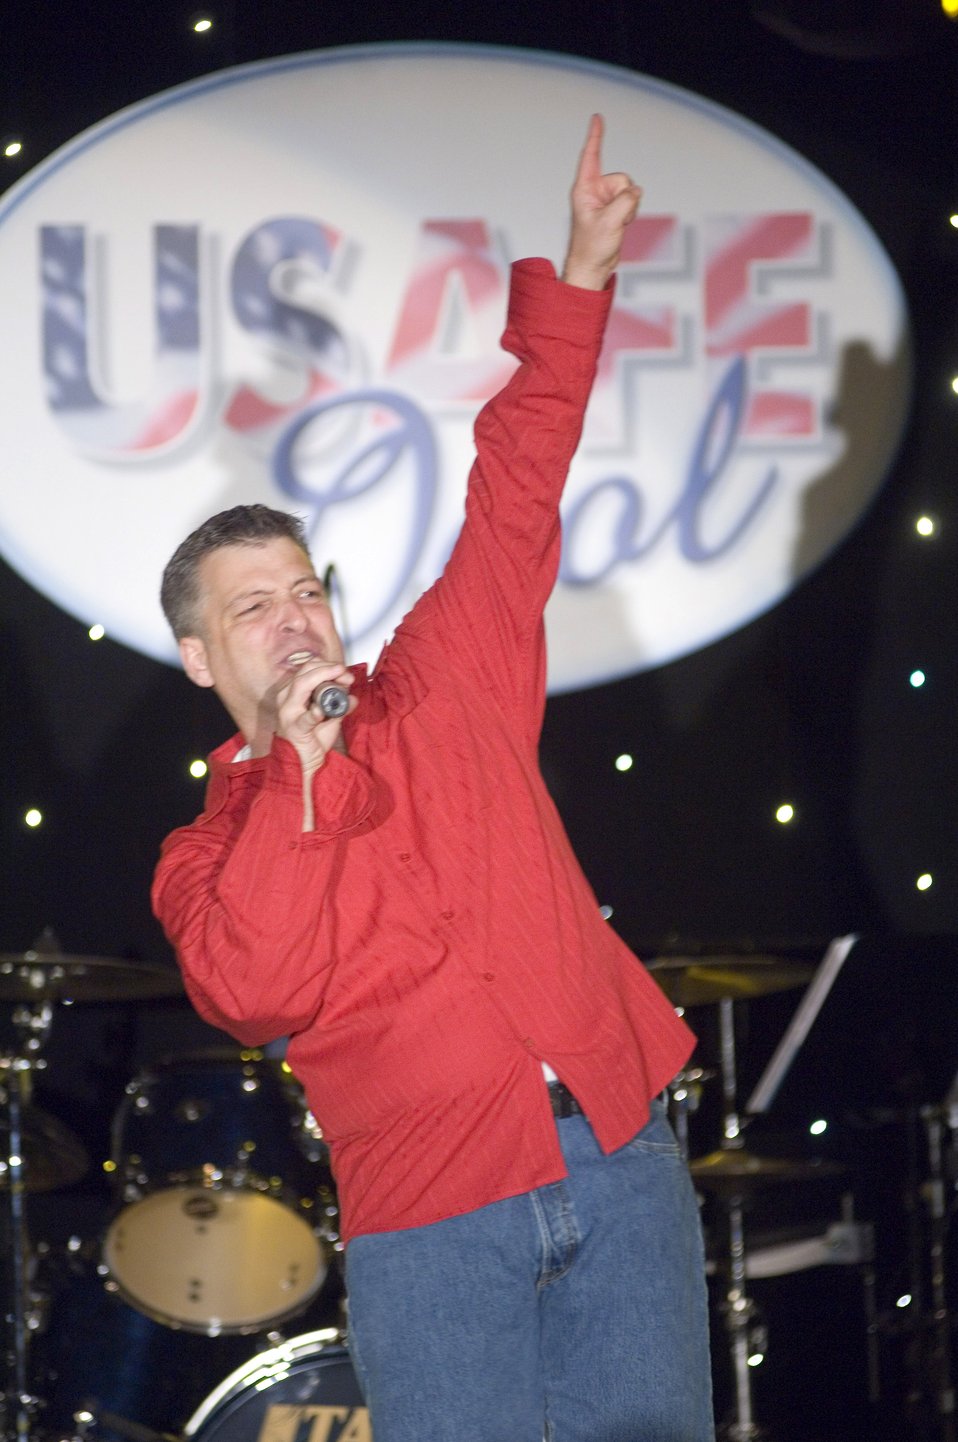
'USAFE Idol'

Master Sgt. Douglas Gosselin performs at United States Air Forces in Europe's